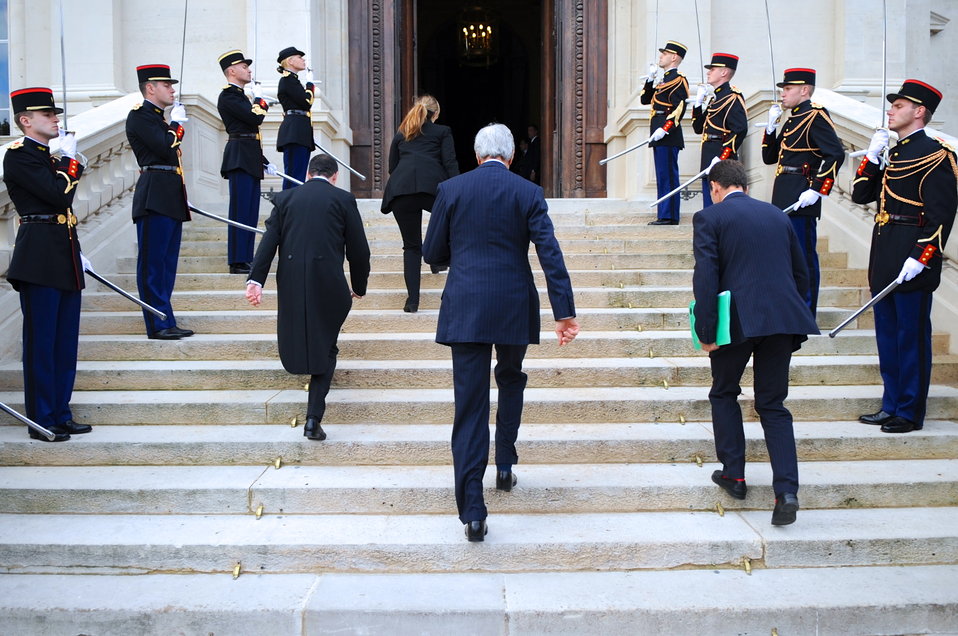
Secretary Kerry Enters French Ministry of Foreign Affairs

U.S. Secretary of State John Kerry climbs the steps of the Ministry of Foreign Affairs for meetings with British Foreign Secretary William Hague and French Foreign Minister Laurent Fabius, focused on Syria and other world issues, in Paris on September 16, 2013.